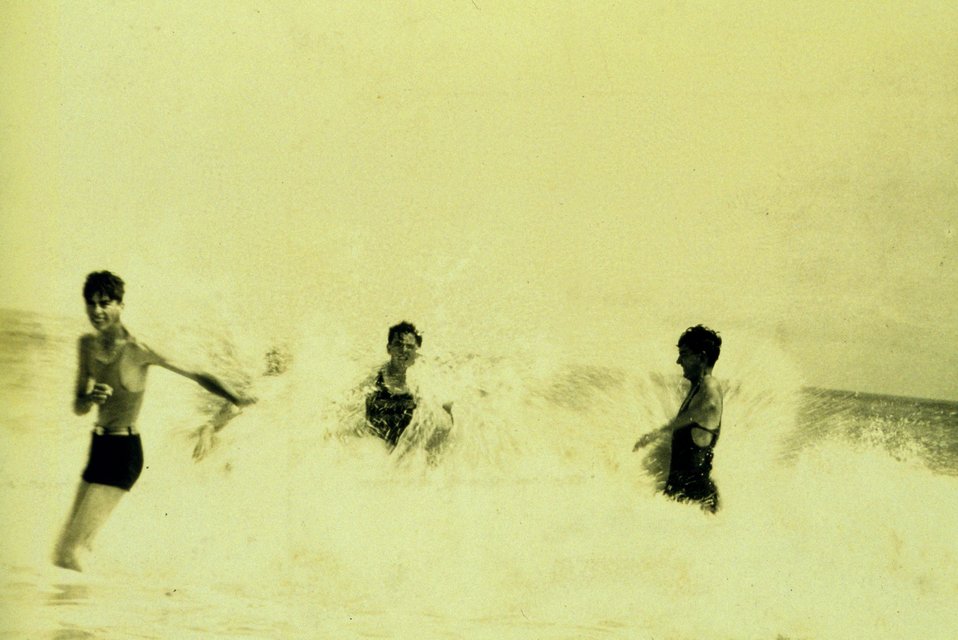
Having fun at the beach.